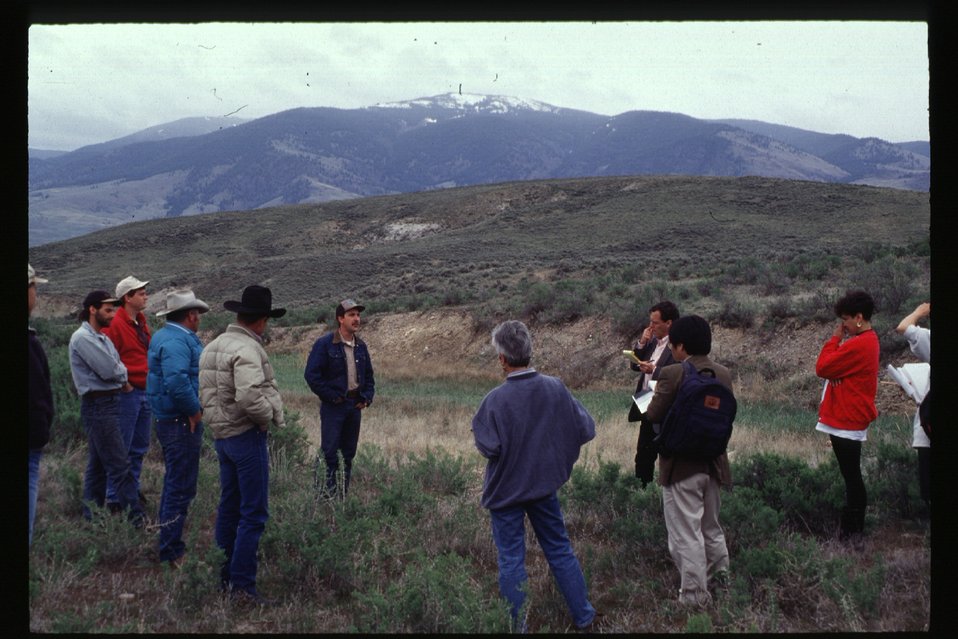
Wild Horse and Burro Adoption Program Gathering Four Rivers Field Office LSRD Lower Snake River District